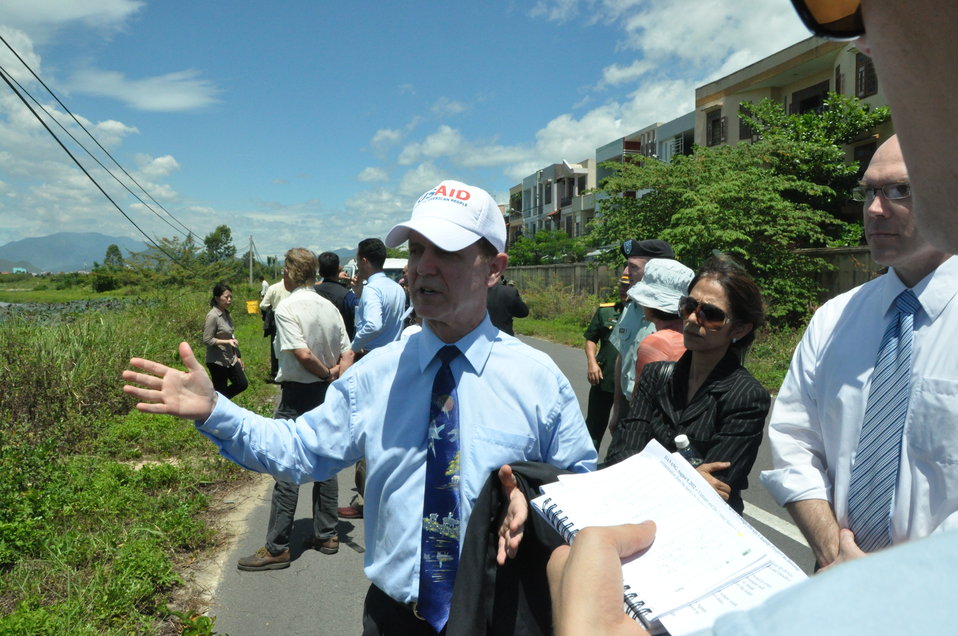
USAID Mission Director Francis Donovan explains the site at the Environmental Remediation of Dioxin Contamination at Danang Airport Project Launch

Danang, August 9, 2012